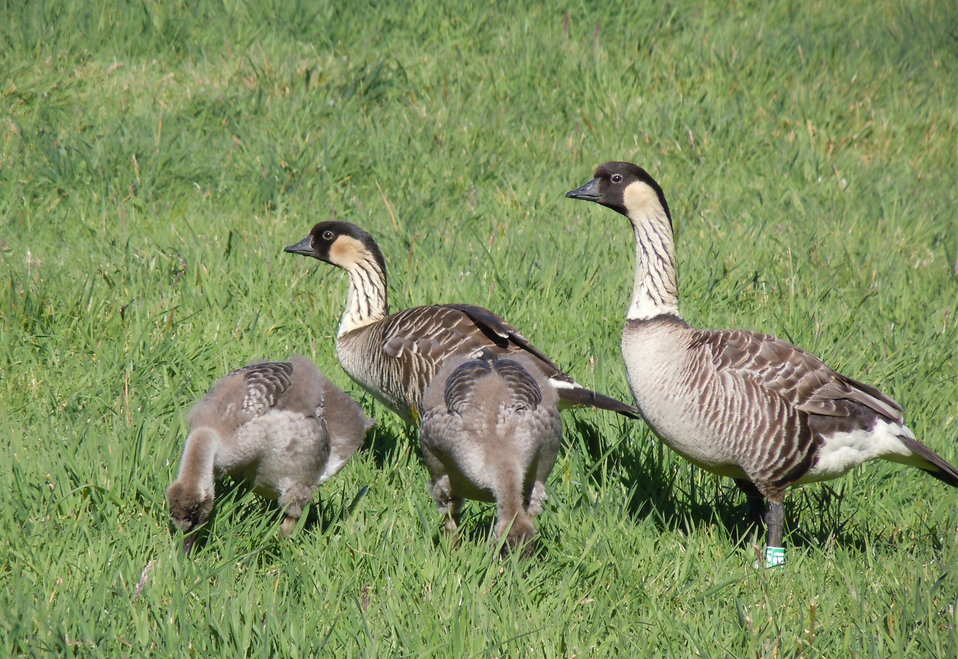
nene family

The endangered nene, or native Hawaiian goose, nests on the ground - a trait that evolved before humans brought mammalian predators to the Hawaiian Islands.
Hakalau Forest National Wildlife Refuge, HI
March 2012